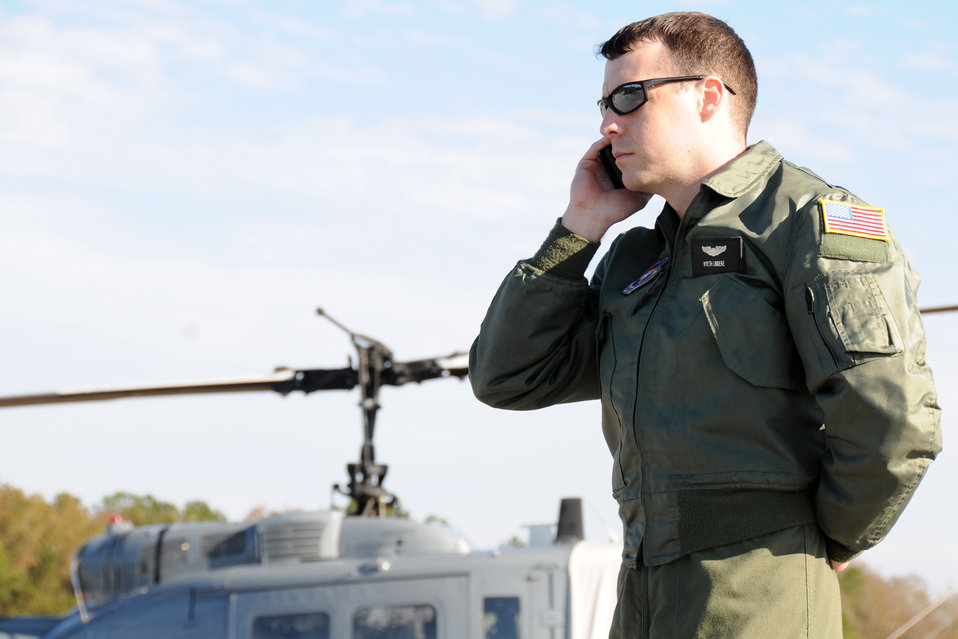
Helicopter training

1st Lt. Wyeth Lindeke, a first assignment instructor pilot with the 23rd Flying Training Squadron at Fort Rucker, Ala., coordinates flight plans with other pilots before a training mission. The 23rd FTS is the third and final phase of undergraduate pilot training before the student pilots can obtain their wings. It is the Air Force's primary source of helicopter pilot training for special operations, combat search and rescue, missile support and distinguished visitor airlift missions.